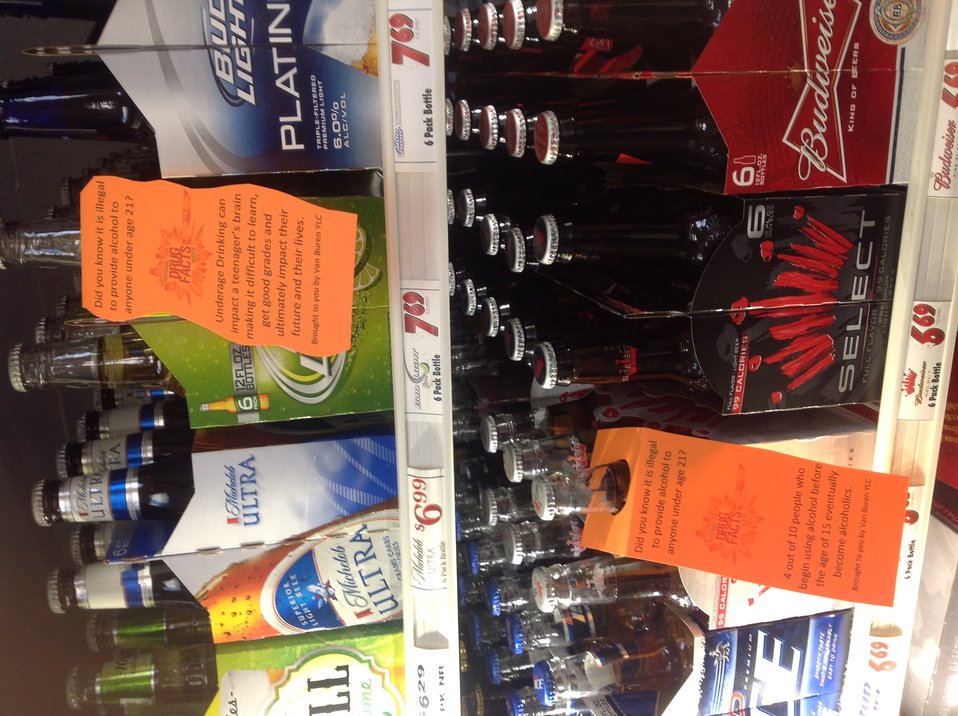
NDFW 2014 Event

Teenagers from the Van Buren County SAFE Coalition's, Youth Leadership Council (YLC) in Keosauqua, Iowa participate in various events during National Drug Facts Week, 2014.